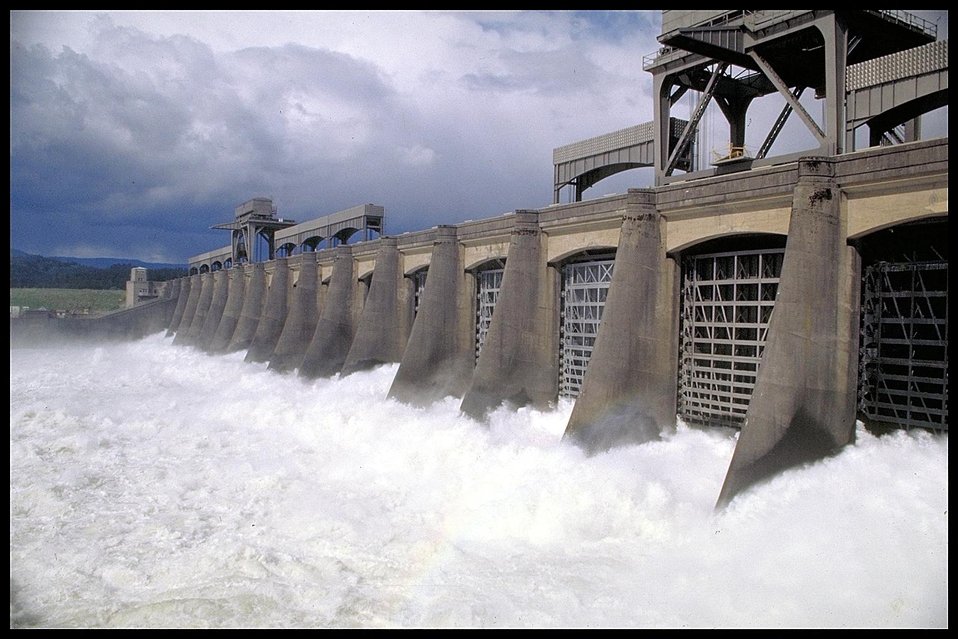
THE BONNEVILLE DAM ON THE COLUMBIA RIVER NEAR PORTLAND, OREGON.

THE BONNEVILLE POWER ADMINISTRATION IS A FEDERAL AGENCY THAT MARKETS AND DELIVERS MORE THAN HALF THE PACIFIC NORTHWEST'S ELECTRICITY AND MAINTAINS A NETWORK OF MORE THAN 12,300 MILES OF TRANSMISSION LINES.